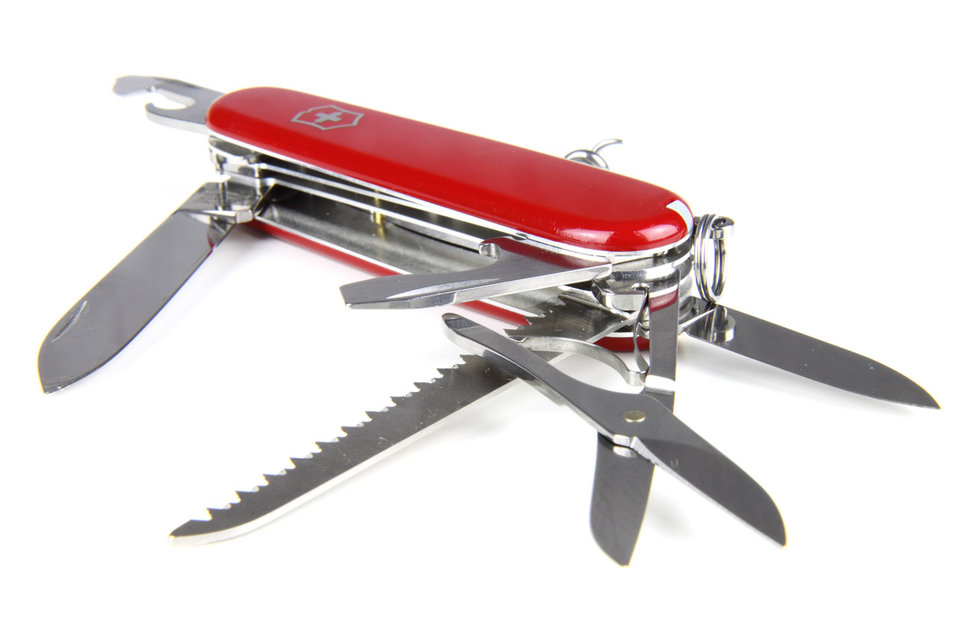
Red swiss knife

Opened red swiss army knife.